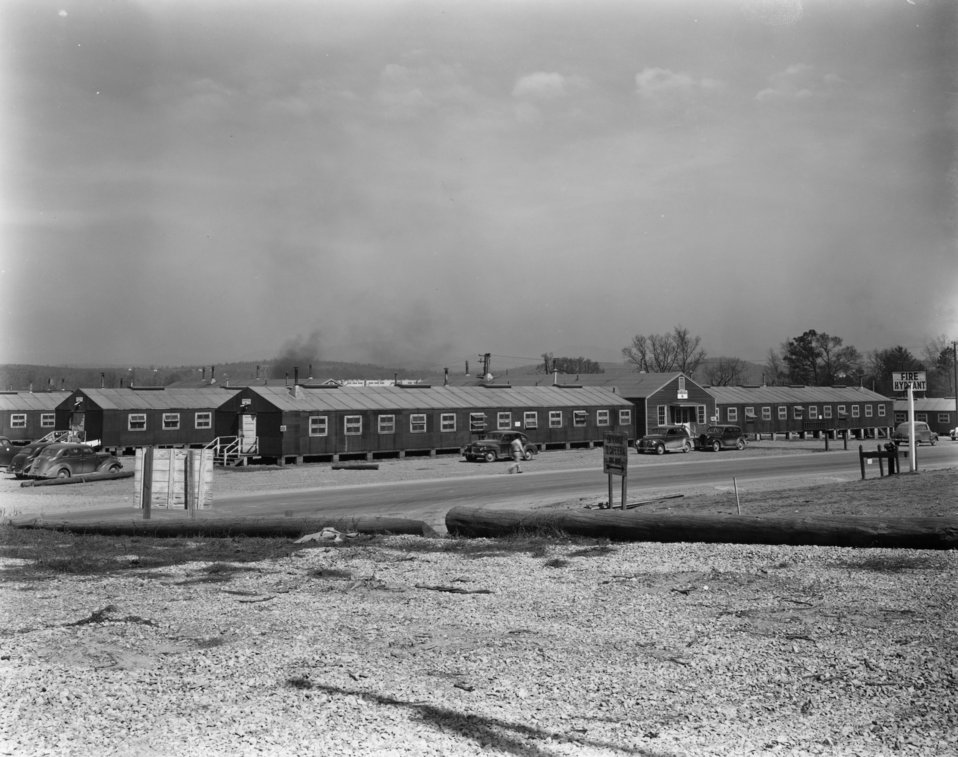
Army Activity at Oak Ridge